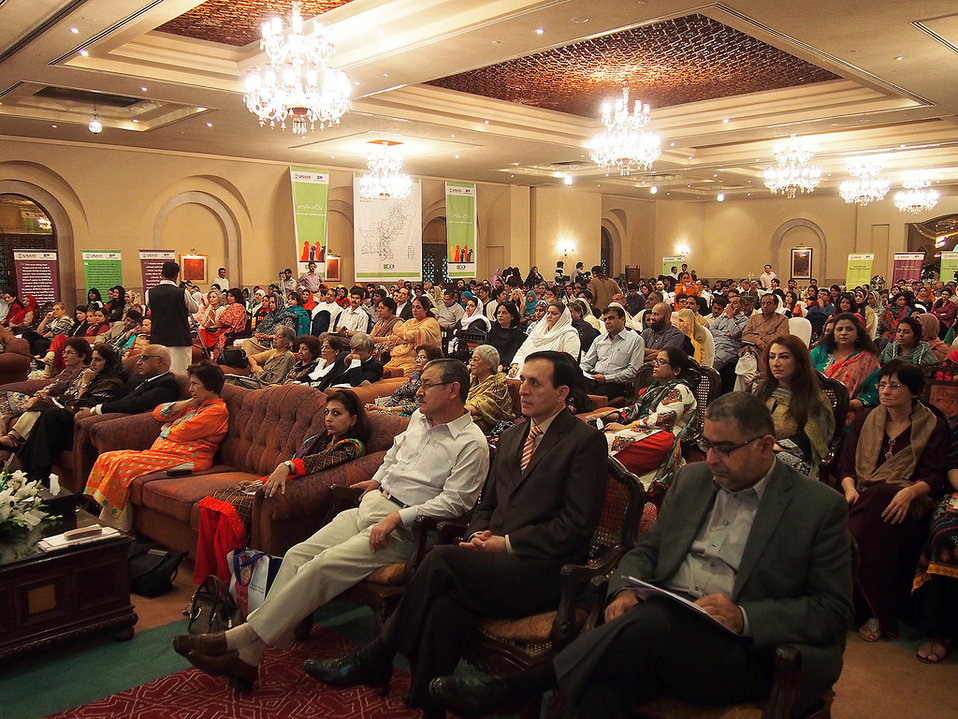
Gender Equity Program, Pakistan

USAID and Aurat Foundation annual event in Islamabad, Sept. 20, 2013